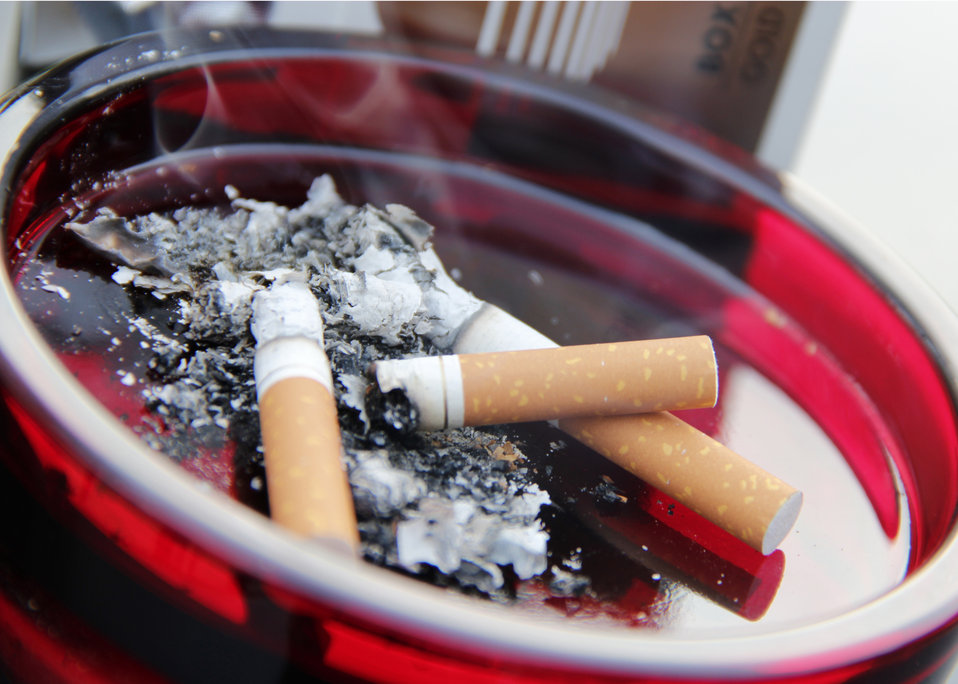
This image depicts a ruby-colored glass ashtray, which had been filled with used cigarette butts along with their ashes. Smoke can be seen rising upward from the pile of butts, indicating that one was still smoldering.